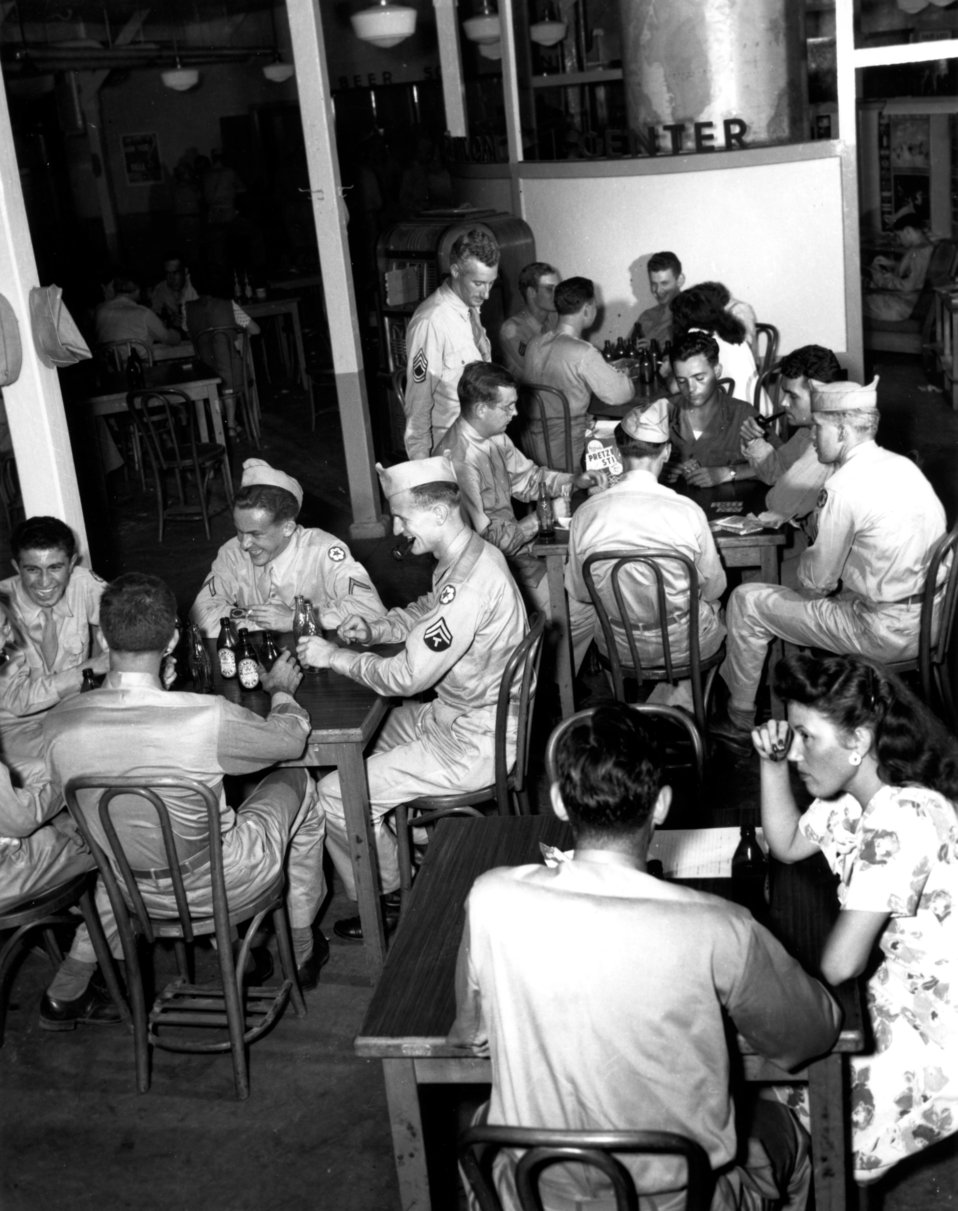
Army Activity at Oak Ridge